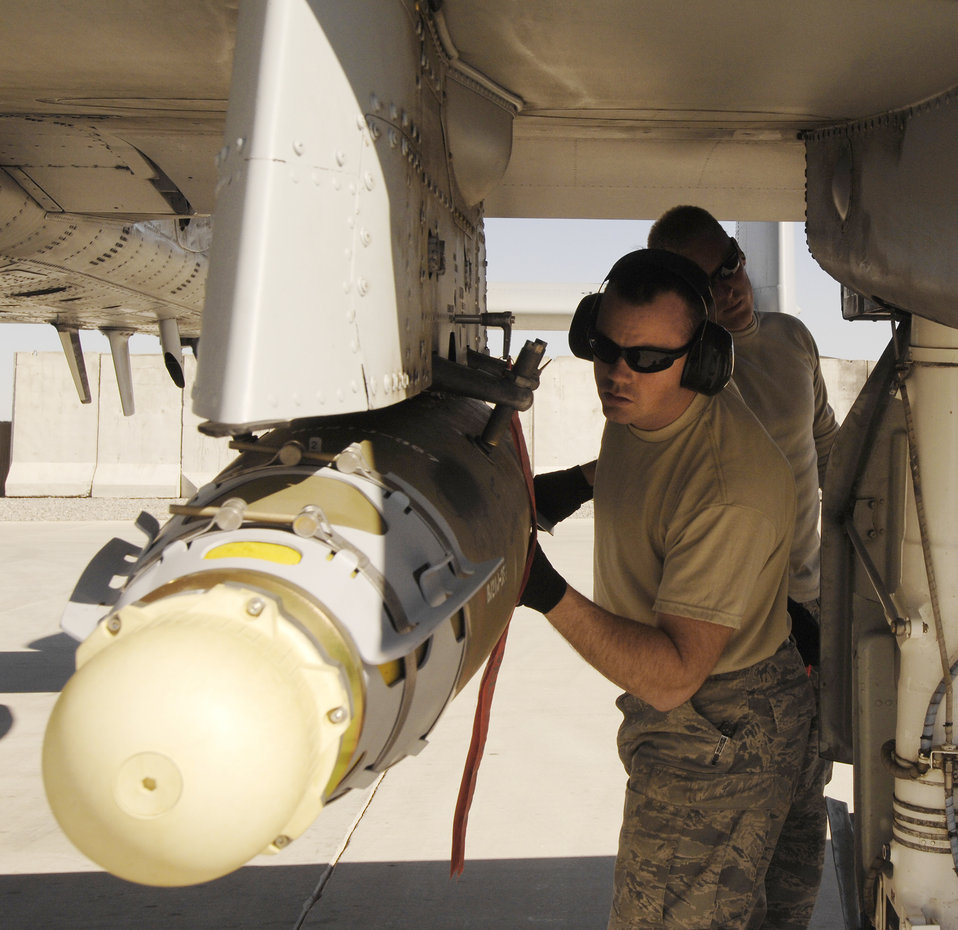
Checking it twice

Airmen with the 451st Expeditionary Aircraft Maintenance Squadron inspect an A-10C Thunderbolt II upon arrival at Kandahar Airfield, Afghanistan, Jan. 1, 2010.